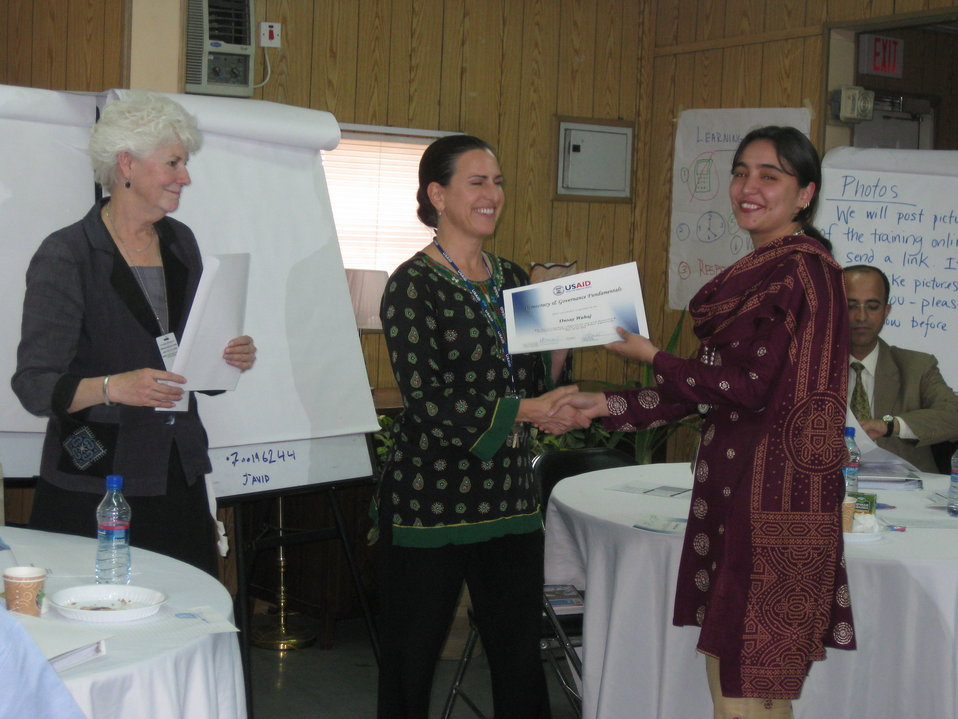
Afghan Youth Voices 070